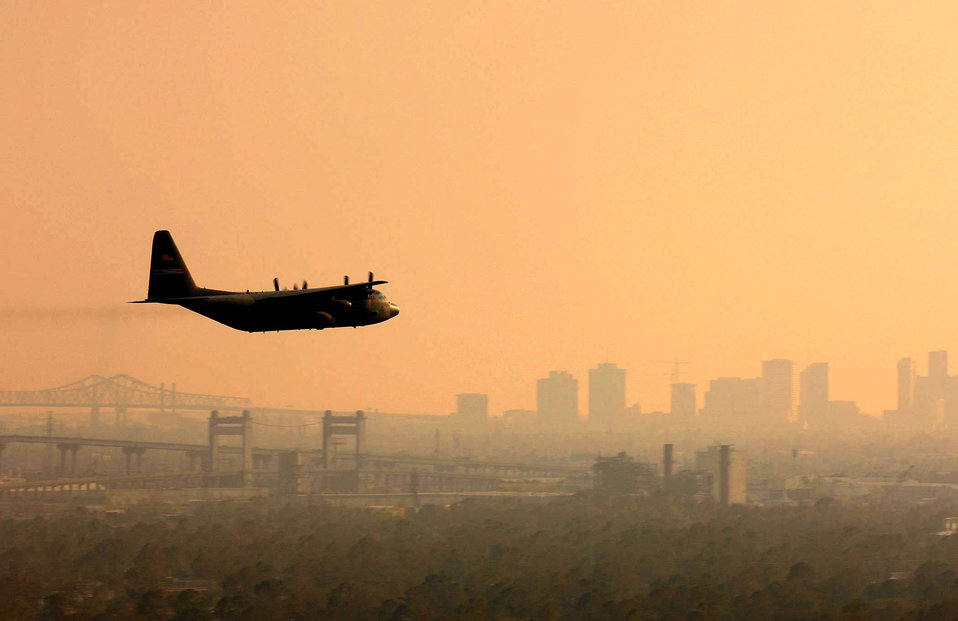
Aerial spray team deploys to Louisiana

An Air Force Reserve C-130 Hercules from the 910th Airlift Wing at Youngstown Air Reserve Station, Ohio, like the one shown here, deployed to Barksdale Air Force Base, La., Sept. 17 to perform spray missions over various parts of the state following Hurricane Ike, which ravaged parts of Texas and Louisiana. Crews will target primarily mosquitoes and filth flies, which are capable of transmitting diseases such as Malaria, West Nile virus, and various types of Encephalitis. The C-130 is capable of spraying about 80,000 acres per day.